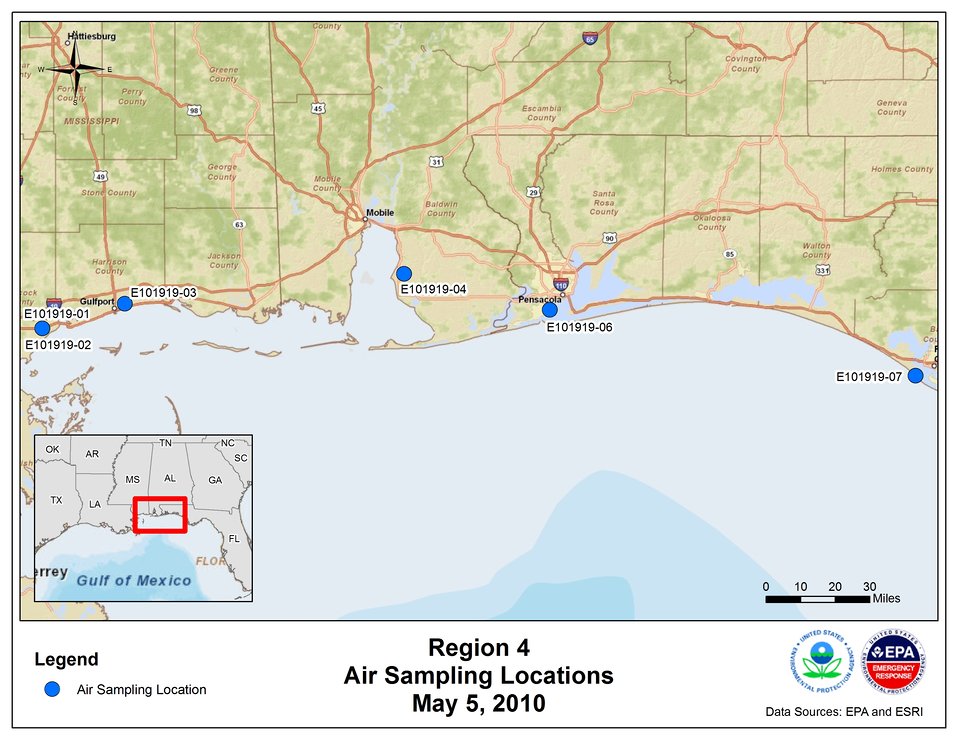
EPA Air Sampling Locations May 5, 2010